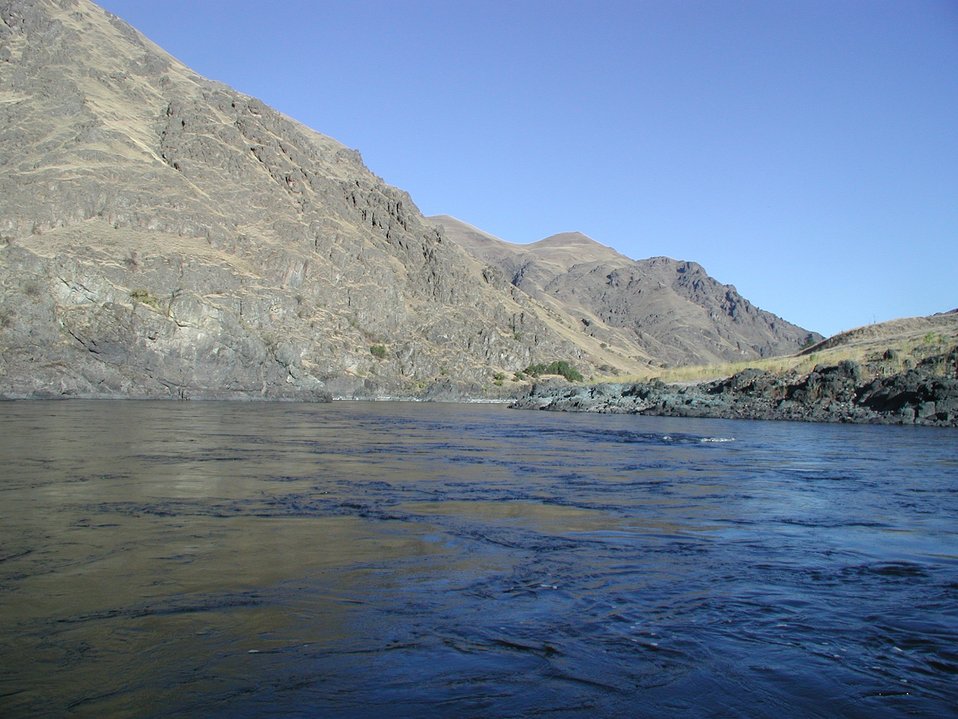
Scenic shot of Lower Salmon River Cottonwood Field Office UCSC Upper Columbia Salmon Clearwater District